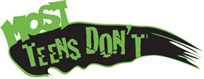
'Most Teens Don't'

Jackson, Mich. Jackson County Substance Abuse Prevention Coalition host NDFW 2013 Events.